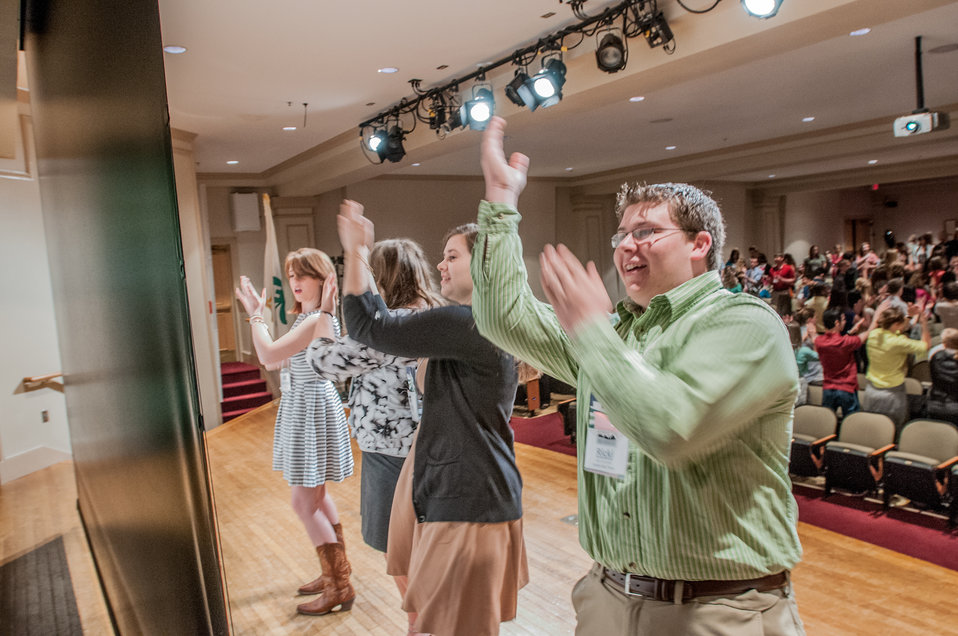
The 4-H Youth Leadership Team of (left-right) Laura Willis (NC), Amy Prestholt (IA), Rachel Fay (NY), and Ricki Schroeder (OK), lead the audience in a dance to pump up the energy before the start of the 2013 National 4-H Conference, on Monday, April 8, 2013 in Chevy Chase, MD. The youth delegates are in grades 10-12 (15-19 years old). The purpose of the conference is to 1) engage 4-H youth in personal development experiences that will increase knowledge, resources, and skills; 2) discuss topics affecting youth and 4-H programming nationwide; and 3) empower and mobilize 4-H youth to create positive social change in their communities in a meaningful and genuine way. The conference also reinforces the rich history of 4-H and its valuable tie to USDA, Cooperative Extension and the Land-Grant University System.